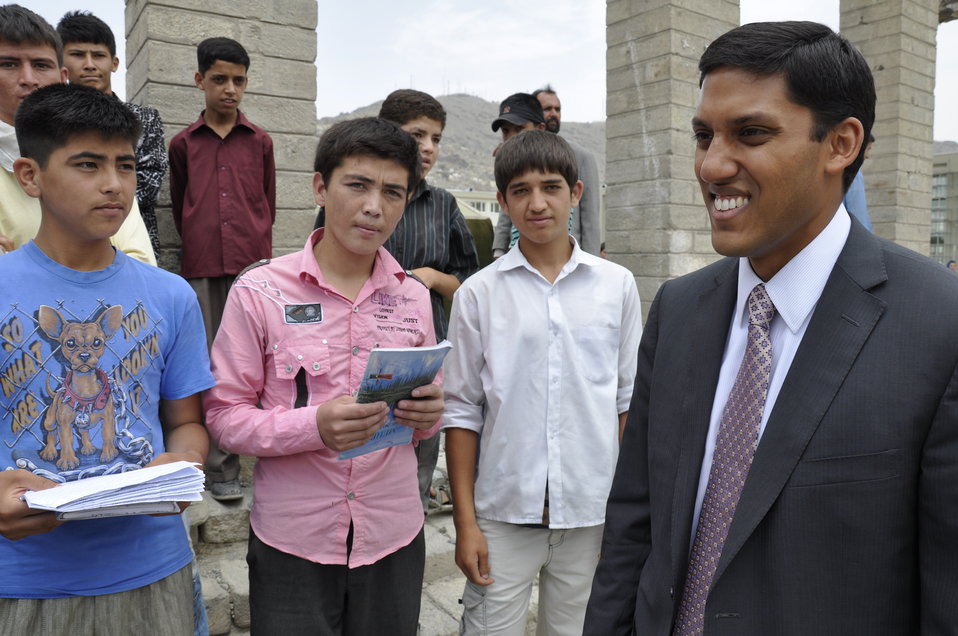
Ghazni High School in Kabul